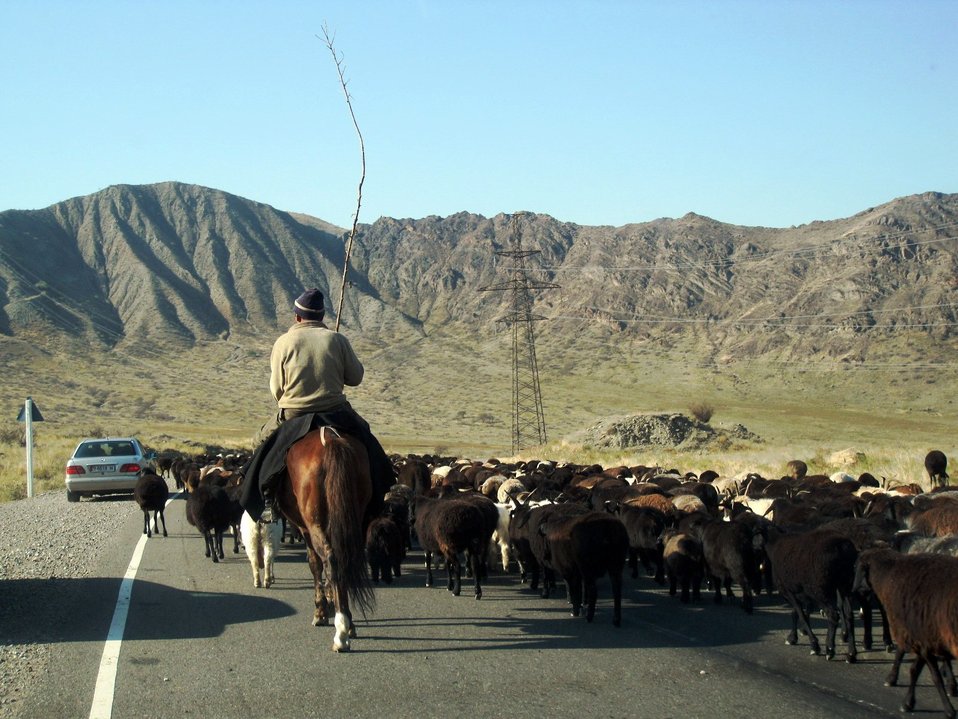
U.S. Embassy Bishkek Officers Travel Kyrgyzstan To Observe Elections

Foreign Service Officers from U.S. Embassy Bishkek travel Kyrgyzstan to observe polling stations and monitor the political and security situation in Kyrgyzstan in October 2010.